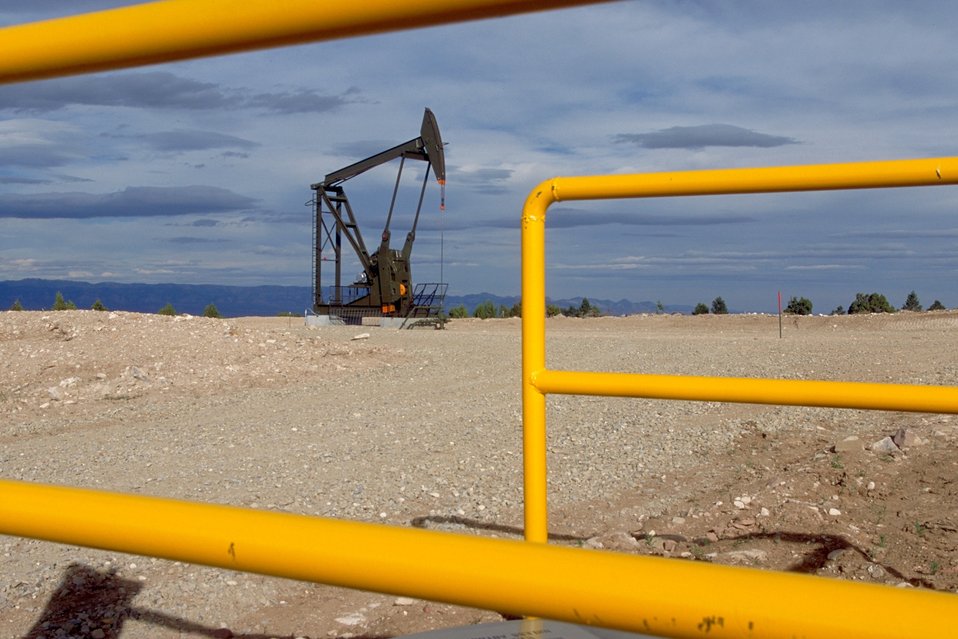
Pump unit producing coal bed methane near Price, Utah.